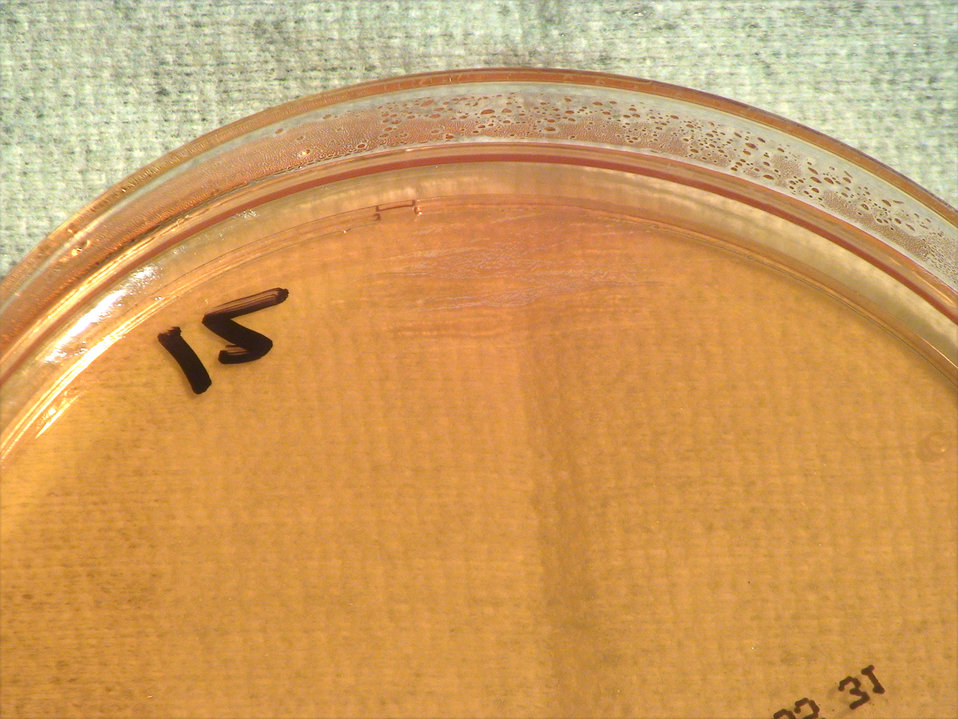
As a closer view of PHIL 12421, this photograph depicts the colonial morphology displayed by Gram-negative Burkholderia thailandensis bacteria, which was grown on a medium of Pseudomonas cepacia (PC) agar, for a 24 hour time period, at a temperature of 37�C. Note that 12407 depicts a view of B. thailandensis colonies grown on this same medium, and at the same temperature, but for 48hrs, which is twice the time period, and PHIL 12416 depicts this bacterial specie, grown on PC agar, at a greater temperature, and also, for twice the time period.